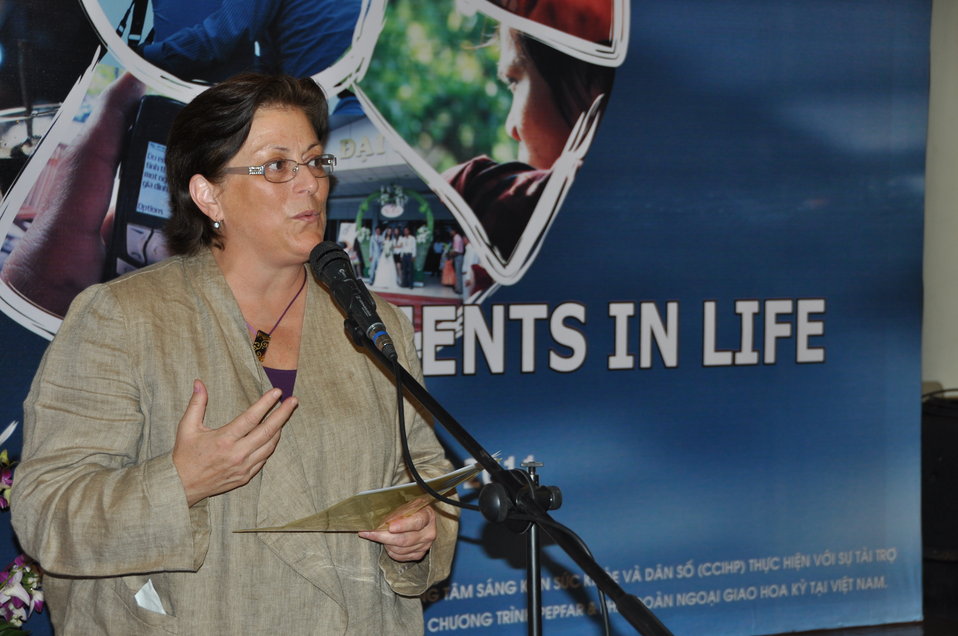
Moments in Life Exhibit: PEPFAR

U.S. Embassy Deputy Chief of Mission Claire Pierangelo speaks at the opening of the photo exhibit in Hanoi.